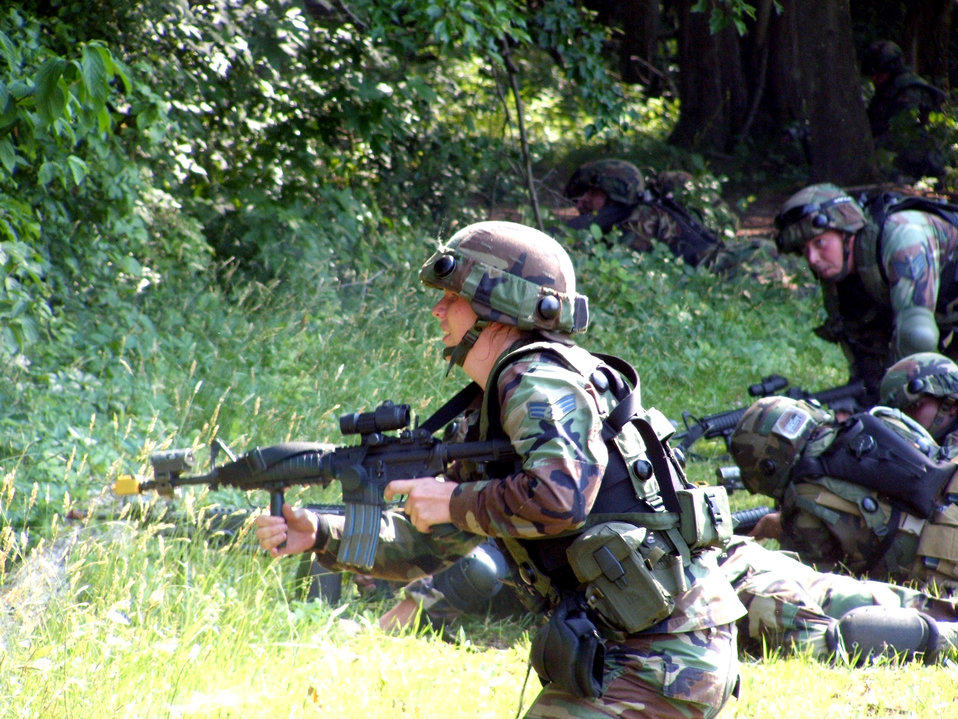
Preparing for deployment

Senior Airman Karyn Chalifoux responds to a scenario during combat patrol and tactics training at Fort Dix, N.J., on Monday, June 19. More than 165 students are participating in Air Force Integrated Contingency Skills Training Course 06-4. Airmen participating in the two-week training are preparing for deployments. The course is taught by instructors from the Air Mobility Warfare Center's 421st Combat Training Squadron. Airman Chalifoux is assigned to the 6th Security Forces Squadron at MacDill Air Force Base, Fla.